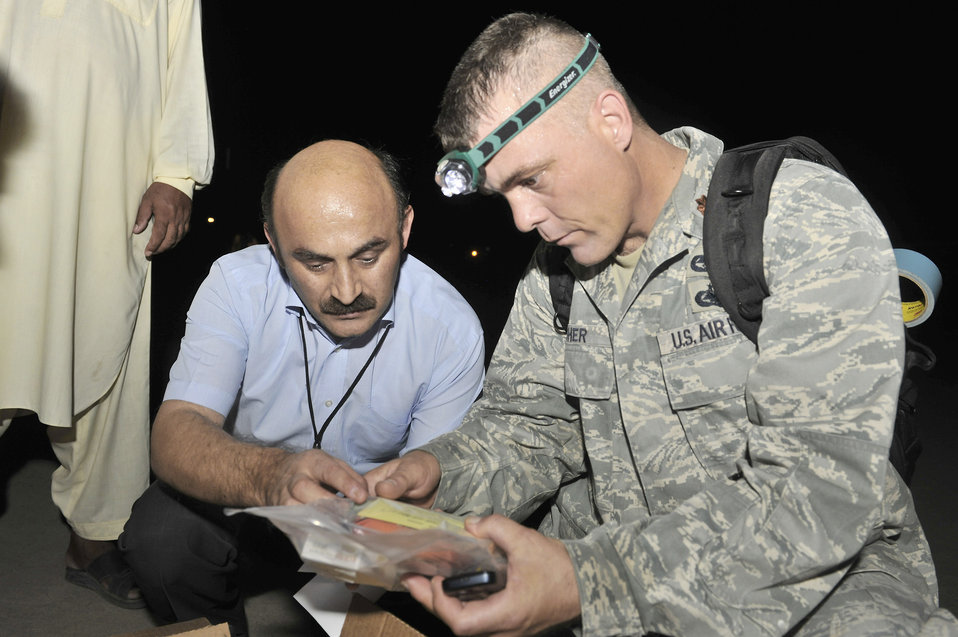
Pakistan relief efforts

Maj. James Swisher shows Hassan Zulfiquar the contents of a Halal meal July 31, 2010, in Peshawar, Pakistan. The meals were delivered by a C-130H Hercules assigned to the 455th Air Expeditionary Wing from Bagram Airfield, Afghanistan. Mr. Zulfiguar is the Director of National Disaster Management Authority for Pakistan and Major Swisher is a representative of the Office of Defense Representative of Pakistan.